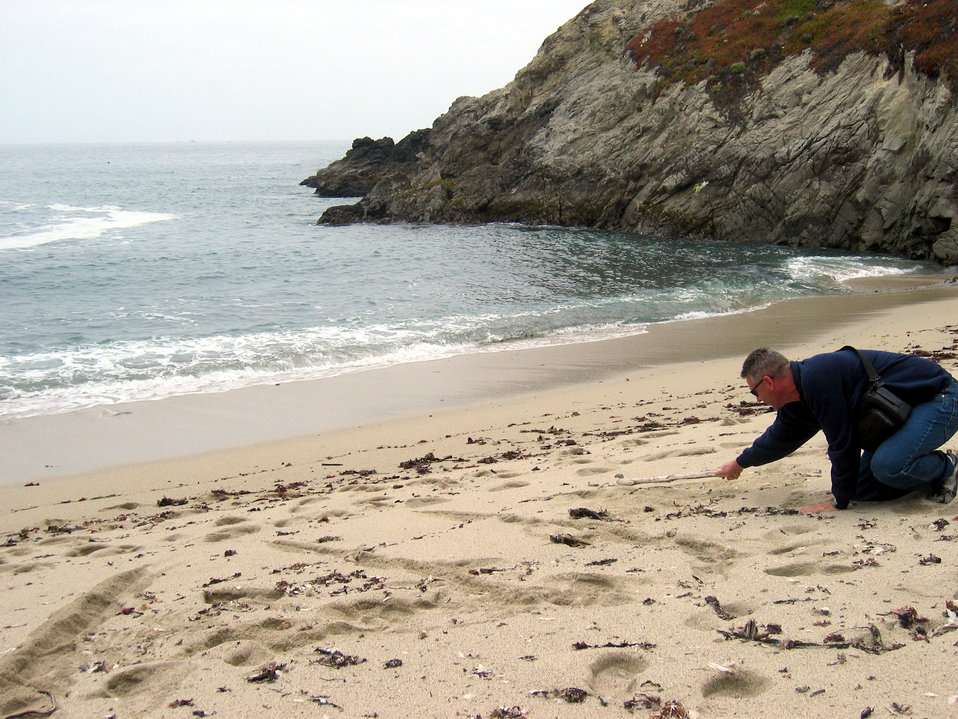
A different viewpoint

BODEGA BAY, Calif. -- Master Sgt. Craig Silver carves his class number into the beach here. He is one of four Air Force master sergeants attending the Coast Guard Chief Petty Officer's Academy. Sergeant Silver is stationed at Travis Air Force Base, Calif.